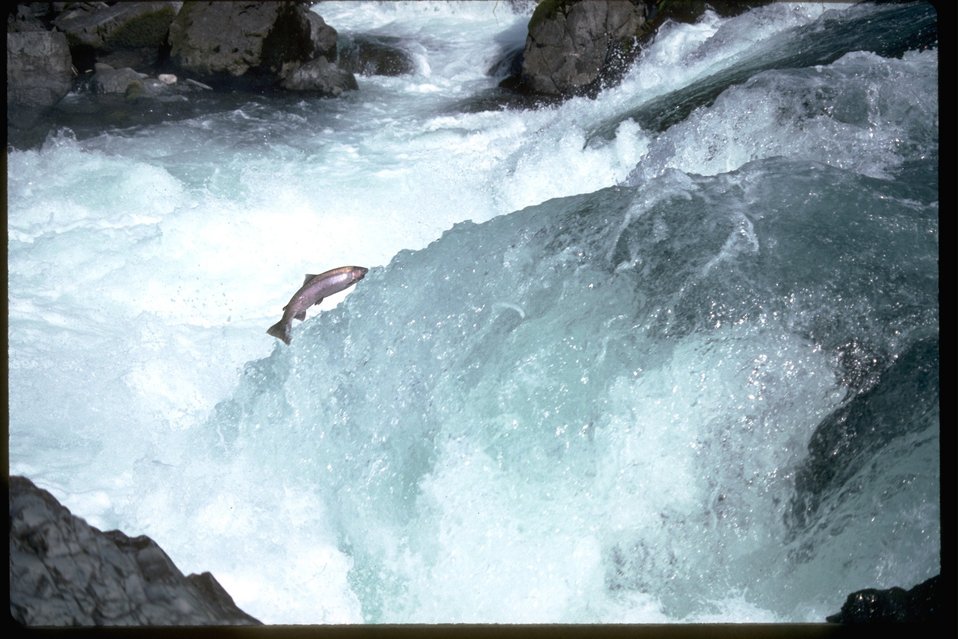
Salmon or Steelhead jumping up falls.